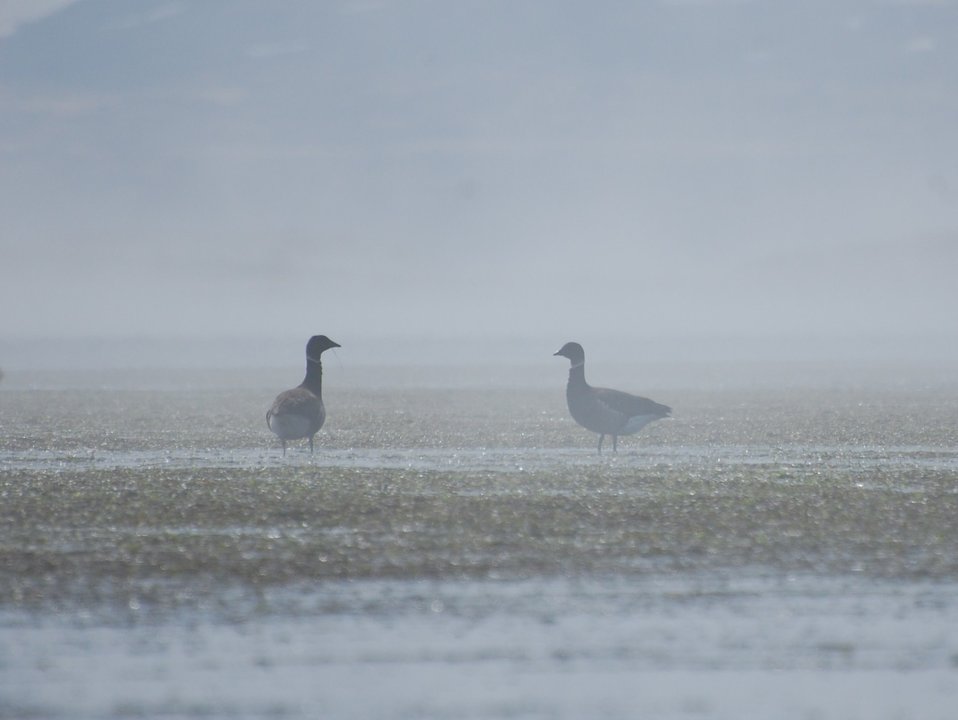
Brant on eelgrass, Izembek Lagoon, Izembek National Wildlife Refuge
Photo by Kristine Sowl, USFWS, Public domain